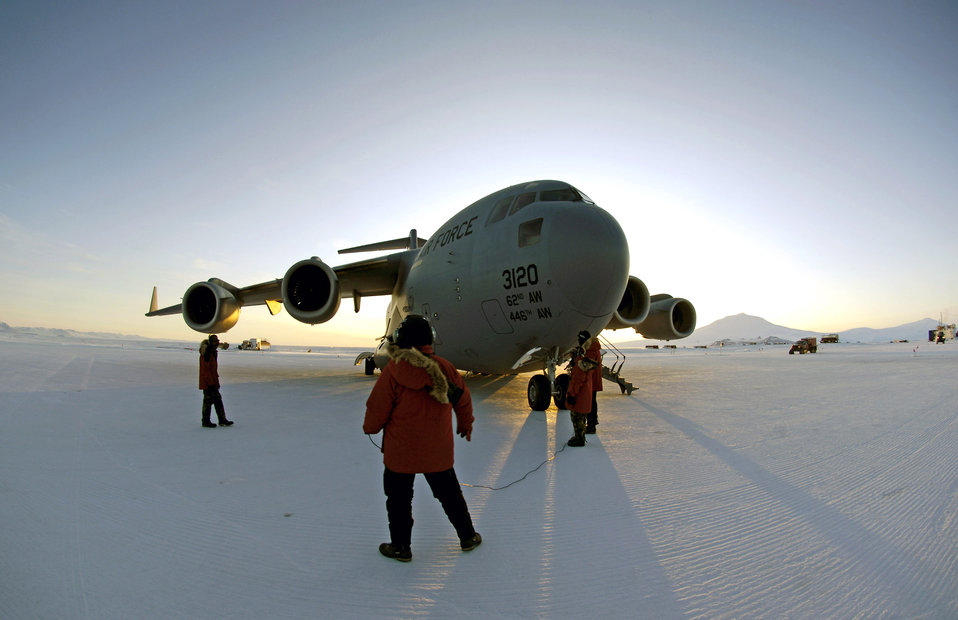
Winter flights to Antarctica wrap up

A loadmaster and maintenance members conduct preflight checks on a C-17 Globemaster III before taking off on an Operation Deep Freeze winter fly-in mission Aug. 25 from Pegasus White Ice Runway, Antarctica. A C-17 and 31 Airmen from McChord Air Force Base, Wash., conducted the annual winter fly-in augmentation of scientists, support staff, food and equipment for the U.S. Antarctic Program at McMurdo Station, Antarctica.